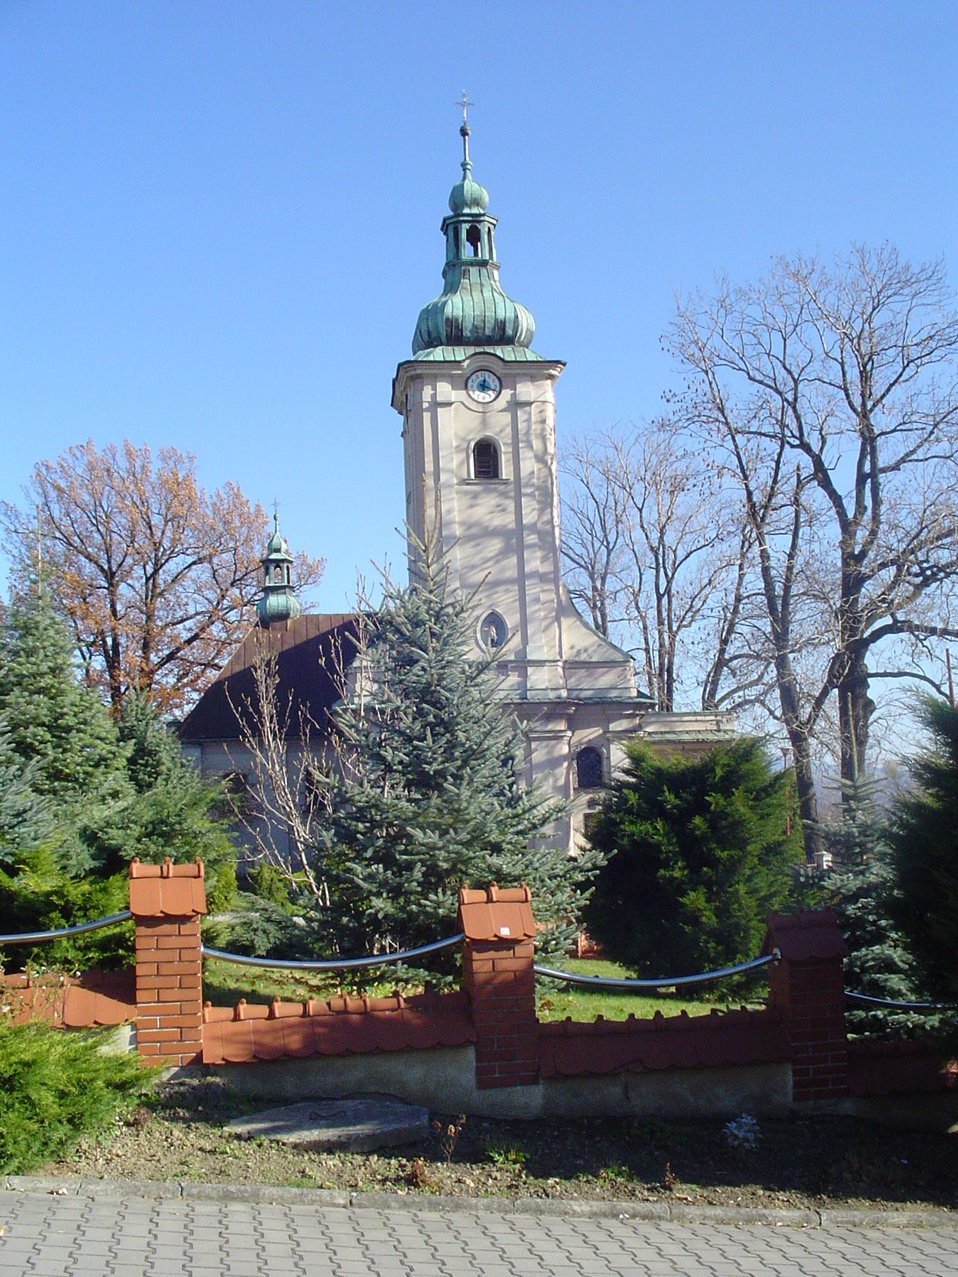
Polski: Kościół Św. Marcina w Radziechowach